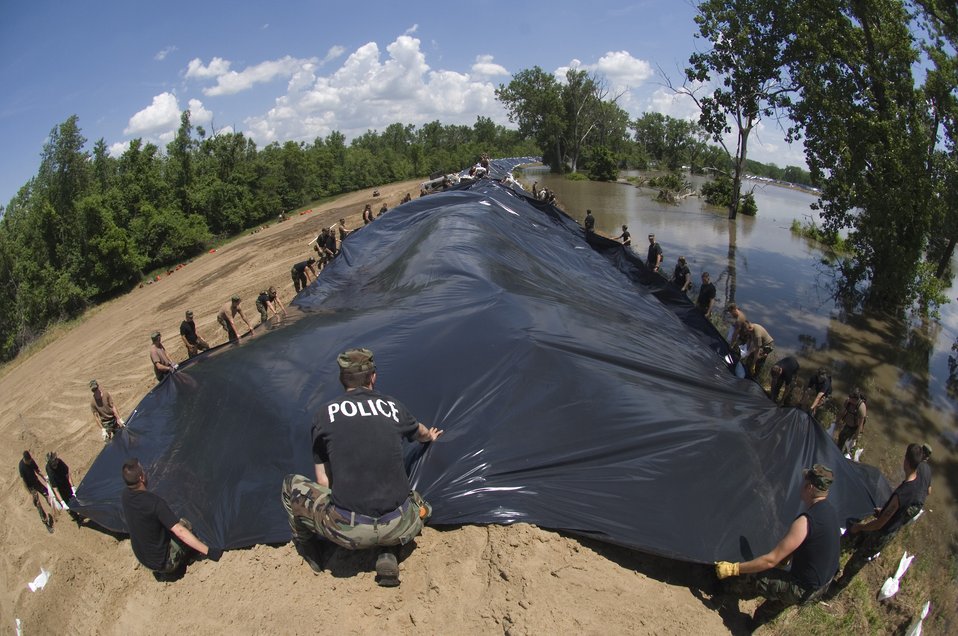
Illinois Air National Guard provides help

Airmen from the Illinois Air National Guard spread sheets of plastic over reinforced levees along the Mississippi River June 19 near Pleasant Hill, Ill. The plastic sheets prevent erosion that could cause the levee to fail and flood thousands of acres of farmland and homes.